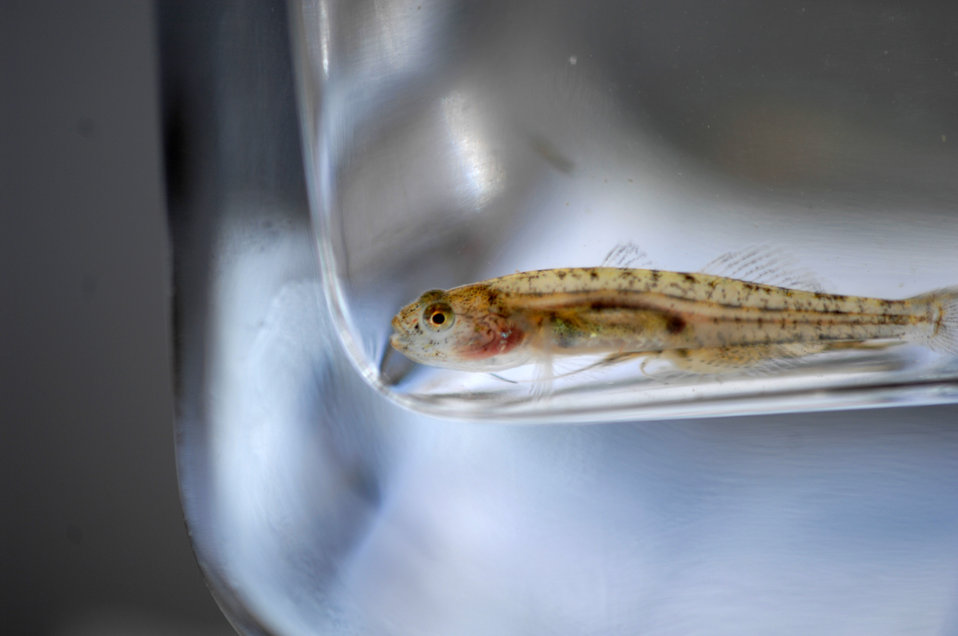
Tidewater Goby 2

Prior to the lagoon breach, the U.S. Fish and Wildlife Service went out to survey for the endangered tidewater goby.